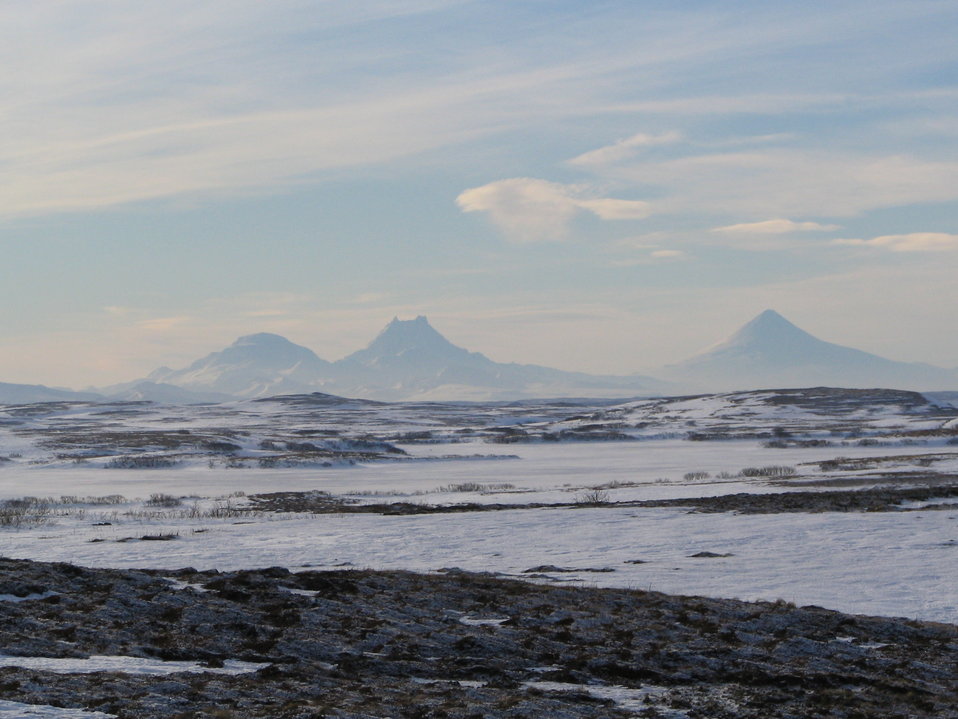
Glimpse of Unimak Volcanoes

Izembek National Wildlife Refuge